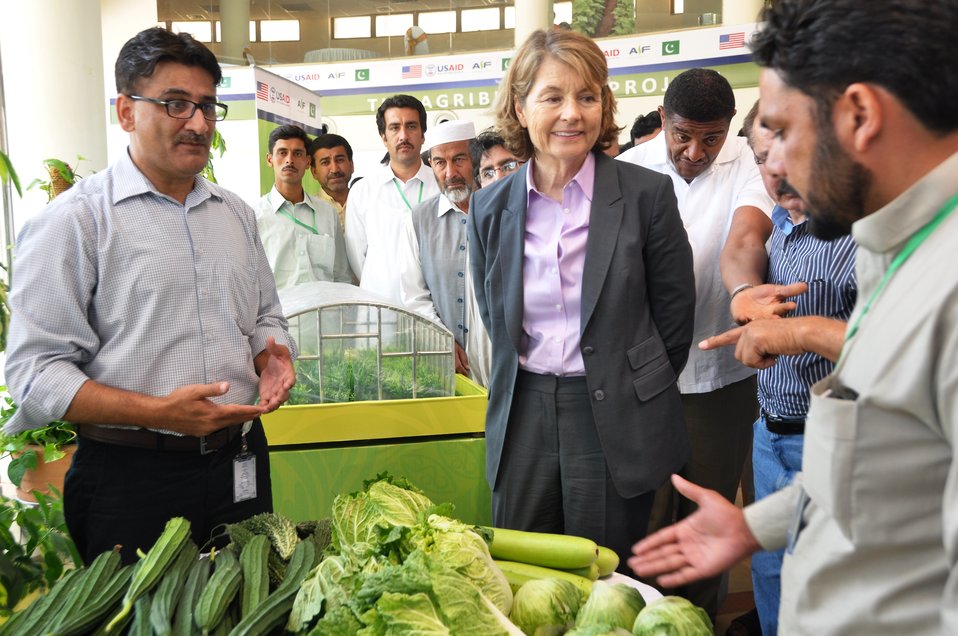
Pakistan Vegetable Fair 2014 (organized by USAID’s Agribusiness Project)

Acting Mission Director for USAID, Pakistan, Nancy Estes, toured the fair and reiterated USG’s commitment to develop Pakistan’s agricultural sector. “The produce we see here today marks the introduction of greenhouse technology in Pakistan on a large scale.